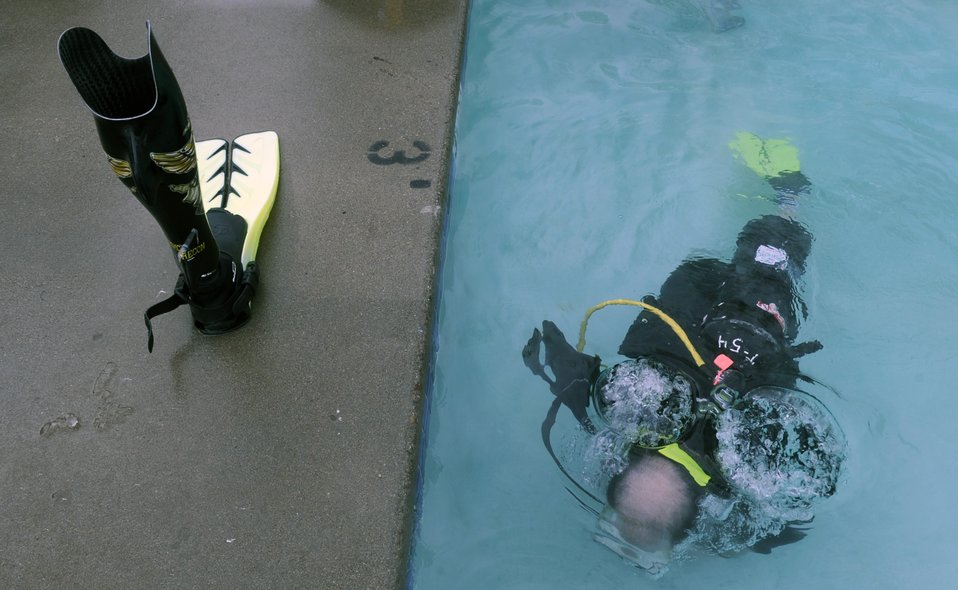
Winter rehabilitation clinic shows veterans potential

Bill White learns to scuba dive inside a pool at the Silver Tree Hotel during the 23rd National Disabled Veterans Winter Sports Clinic held March at the Snowmass Village, Colo. Mr. White is prior Marine Corps and is from Wood Dale, Ill.